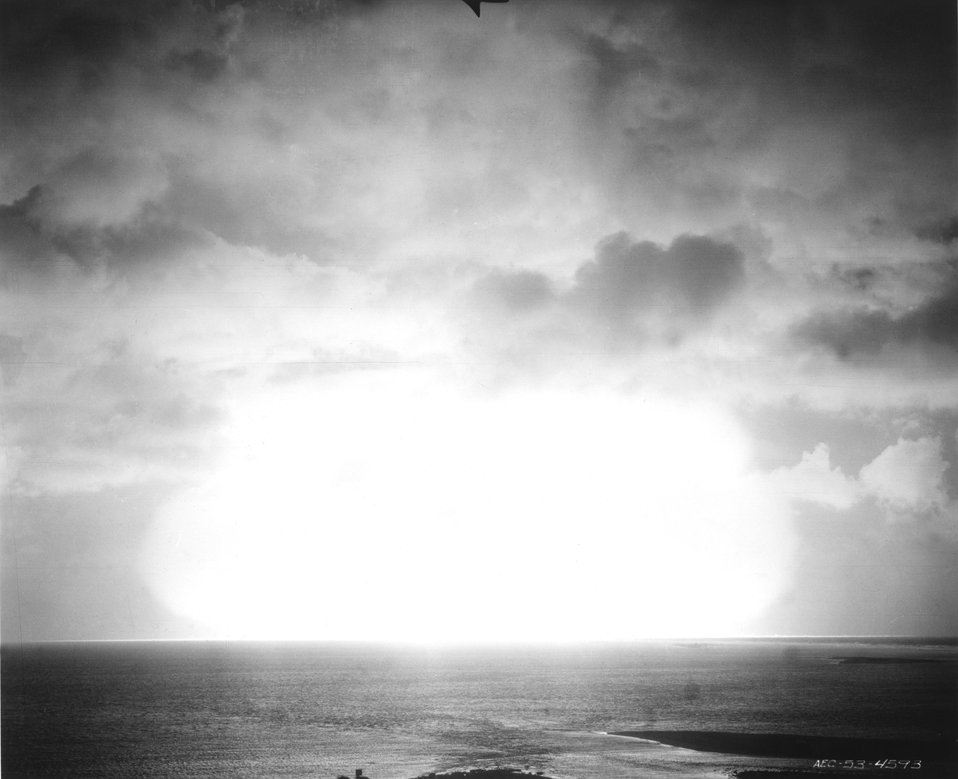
A nuclear detonation during the 1951 spring tests at Eniwetok Atoll is shown with smoke trails from rockets designed to capture sample materials.